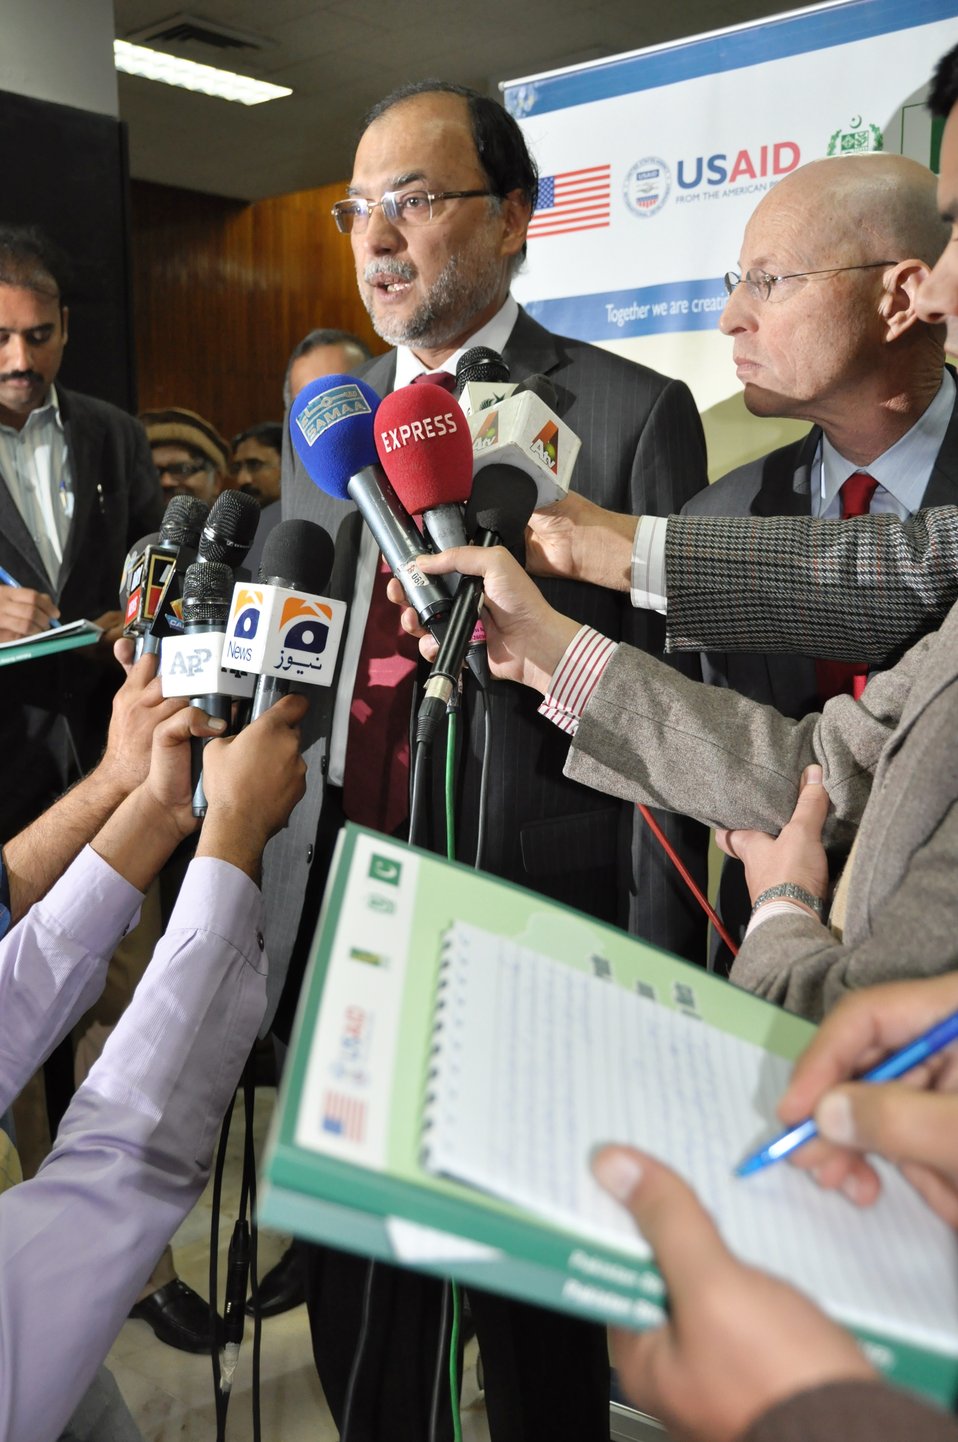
Jan 21, 2014- PSSP Event in Islamabad